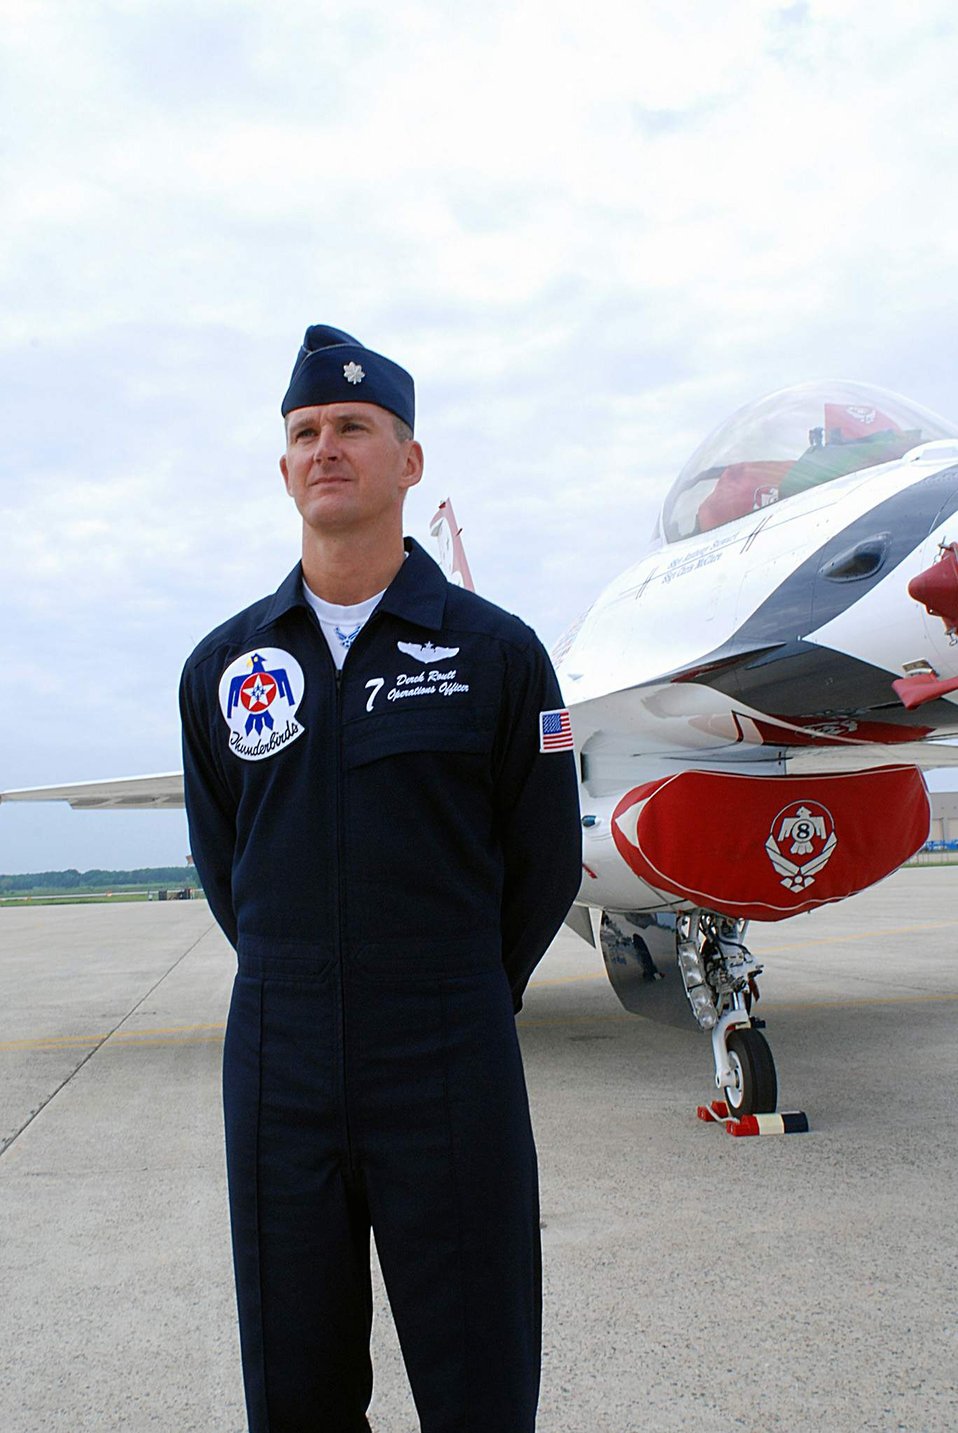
Guardsman flies for the Air Force Thunderbirds

Lt. Col. Derek Routt,